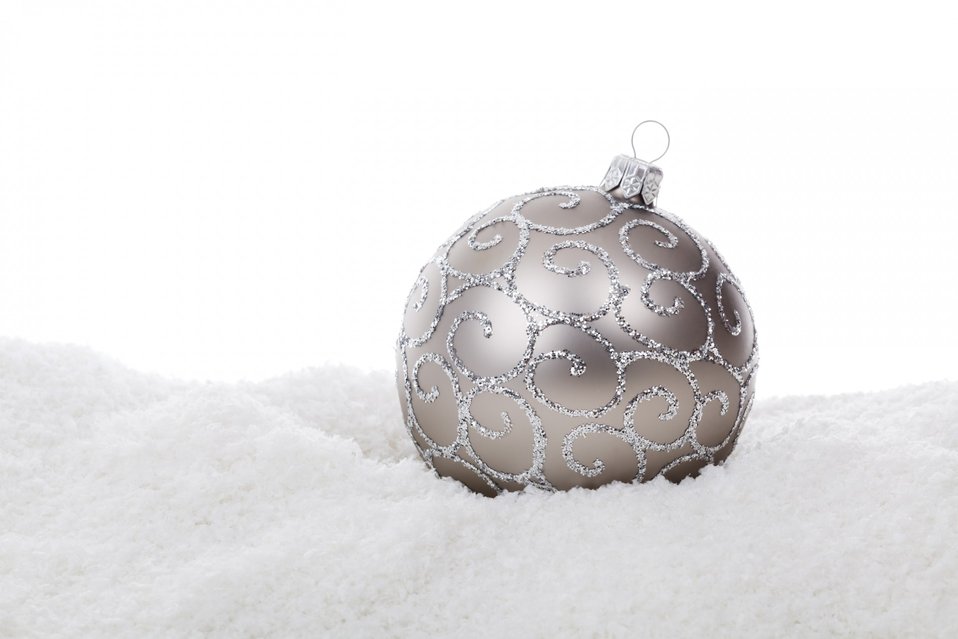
Silver christmas ball in snow isolated on white background.